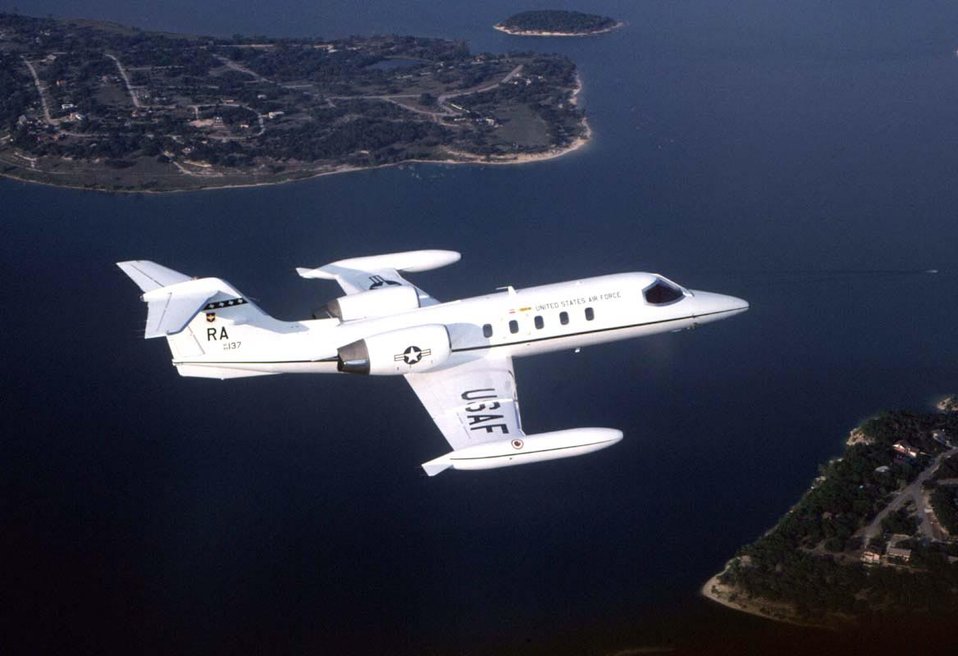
C-21 fleet continues to dwindle

The 76th Airlift Squadron at Ramstein Air Base, Germany, lost three of its 13 C-21 aircraft in January as the Air Force retires the aircraft from the active-duty inventory. The C-21 is the military version of the Lear Jet 35A business jet and is used primarily for senior-level passengers, cargo airlift and aeromedical evacuations. Delivery of the C-21 fleet began in April 1984 and was completed in October 1985.